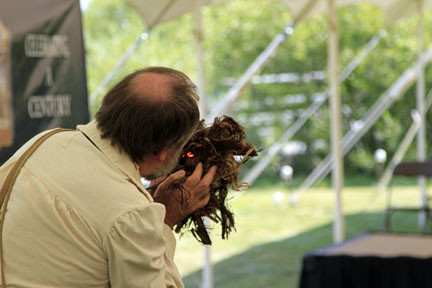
The Critical Skill of Starting a Fire

Grand Teton Naturalist Andrew Langford gave a presentation during the National Elk Refuge's centennial weekend to give the public insight into the legendary mountain men who lived and trapped in Jackson Hole during the 1820s and 1830s. Dressed in appropriate attire, Langford demonstrated many of the specialized skills that were required of these brave and industrious individuals. Here, Langford successfully demonstrated starting a fire without a match.

Credit: USFWS / Jim Crabb, National Elk Refuge volunteer